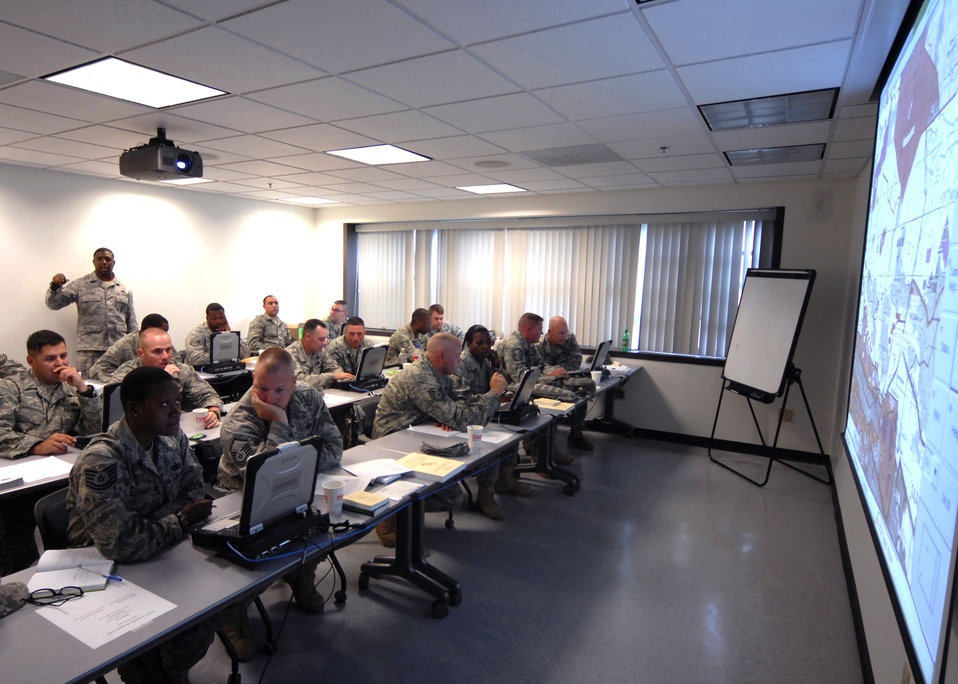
Joint training initiative at Expeditionary Center prepares security forces Airmen for battlefield

Security forces Airmen train on the Army's Blue Force Tracker system during their pre-deployment training at the Air Force Expeditionary Center's 421st Combat Training Squadron Aug. 29, 2009, at Joint Base McGuire-Dix-Lakehurst, N.J. The Blue Force Tracker is a system that gives air and ground units and their commanders a real-time picture of the battlefield.